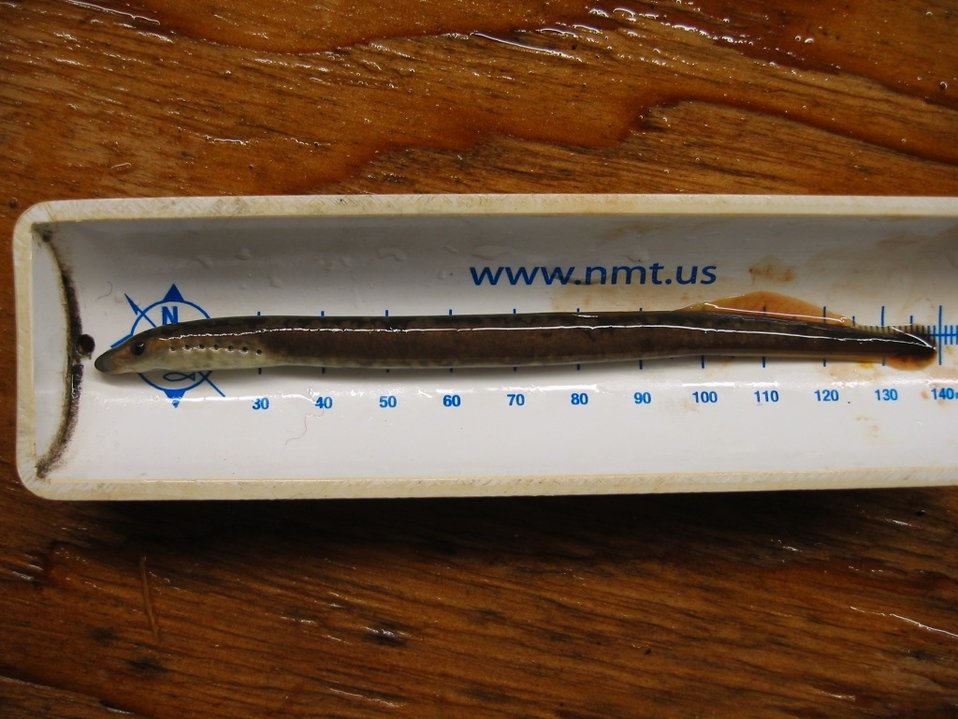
Lamprey